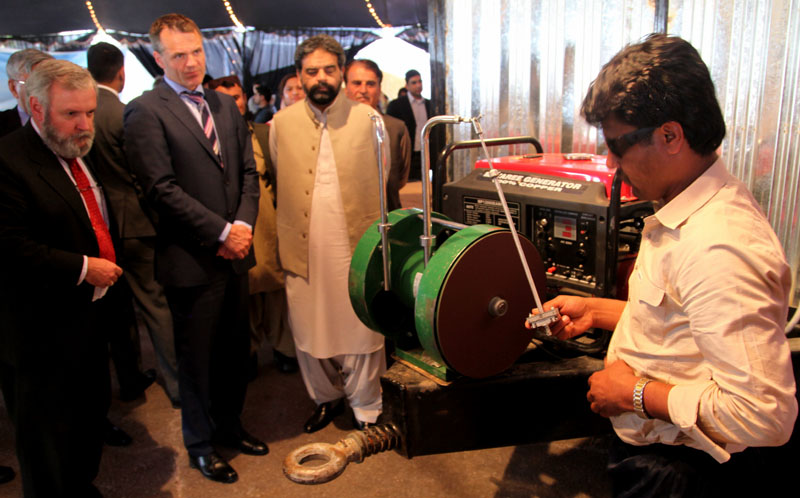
Sheep Shearing tools